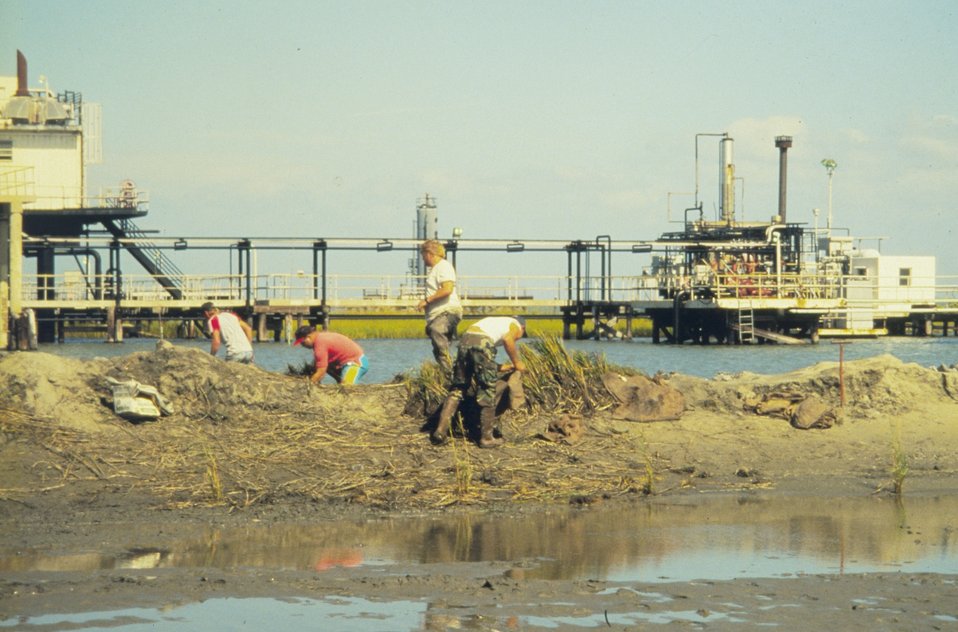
Unloading Spartina alterniflora plants to begin restoration.